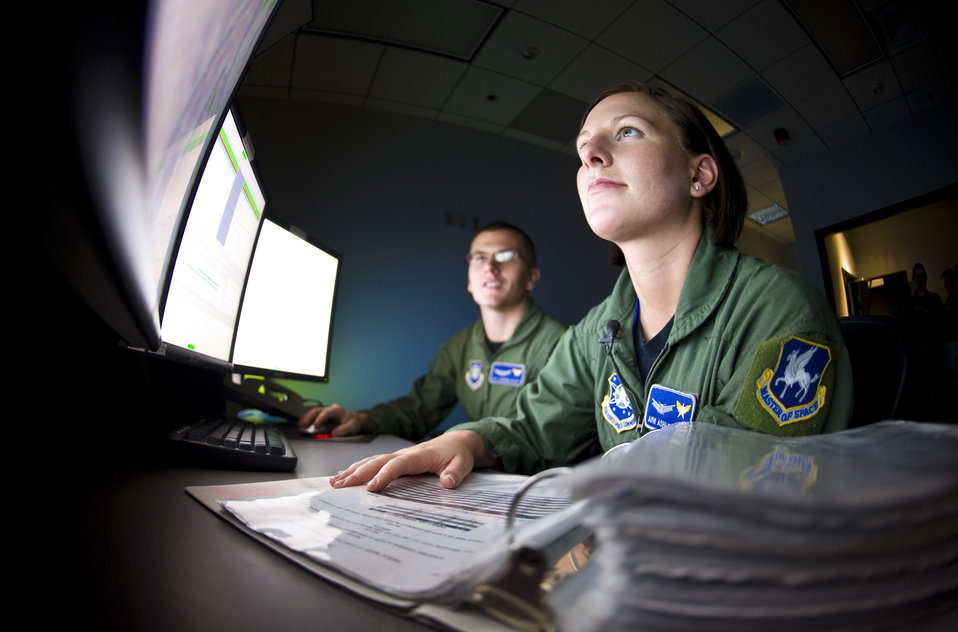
Controlling satellites

Airman Ashley Risk (foreground) and Airman 1st Class Jasper Platt oversee a satellite system procedure at Schriever Air Force Base, Colo. They are space ground link operators with the 4th Space Operations Squadron.